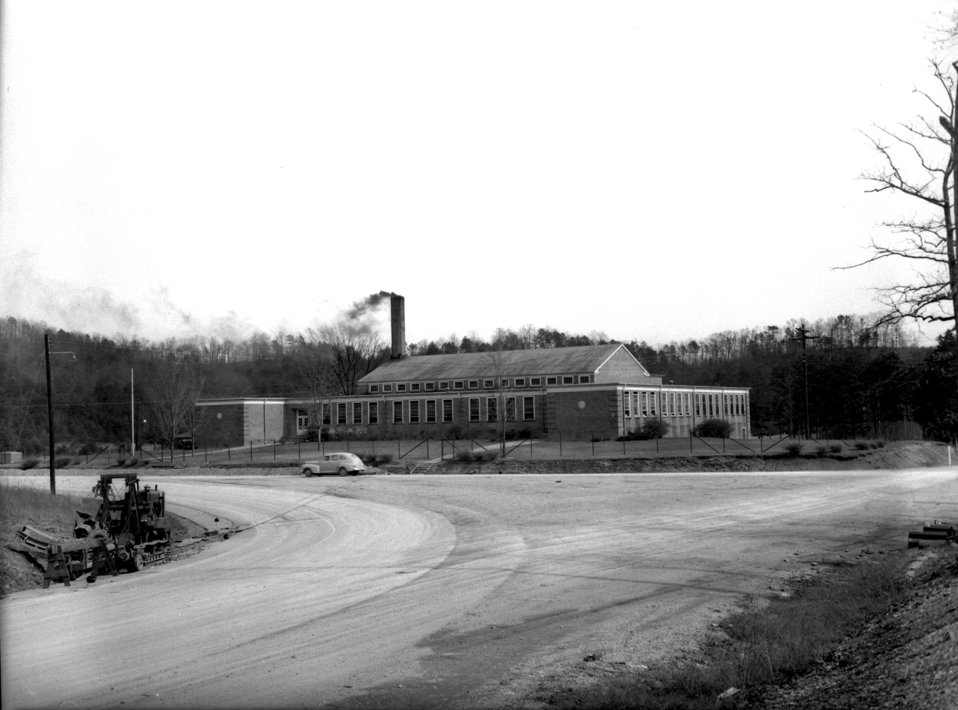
Scarbrough School Oak Ridge

5485-1 DOE photo by Ed Westcott

Scarbrough School Oak Ridge Tennessee March 1949